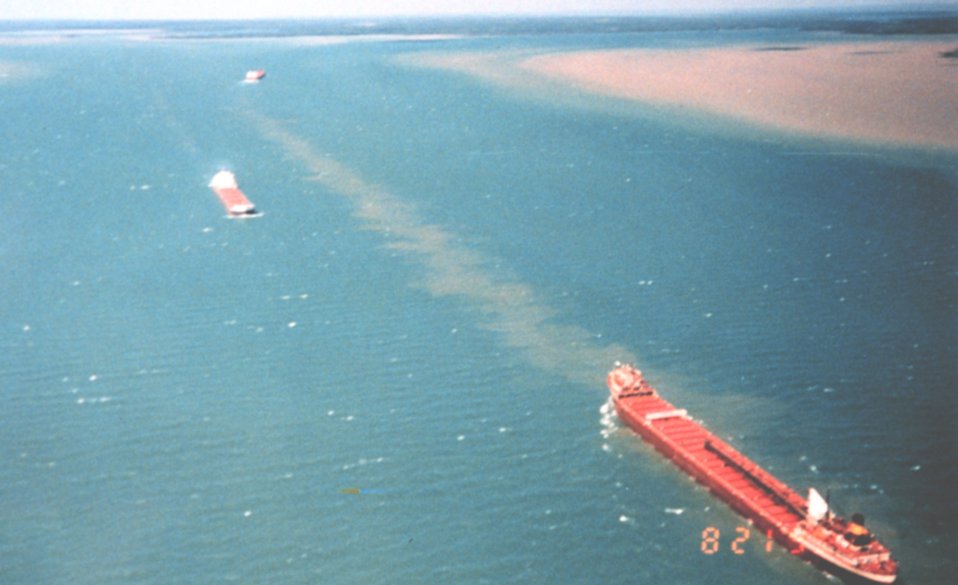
Great Lakes ore carrier in lower right at Sault Ste. Marie